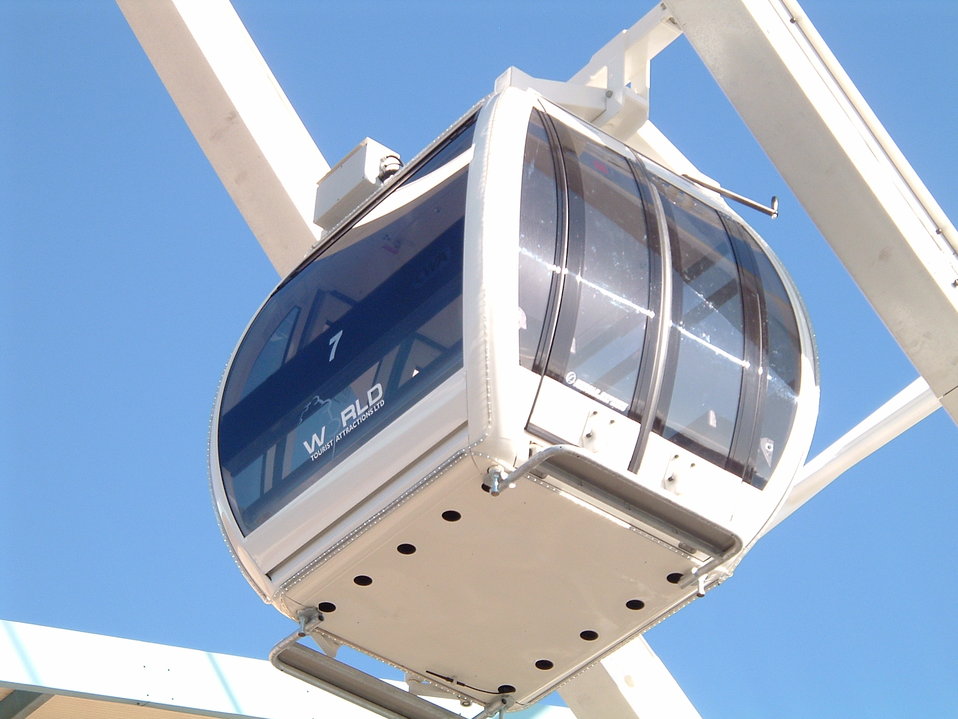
One of the pods on the 54 metre high Yorkshire Wheel, that was installed at the National Railway Museum in York. It was sited 53°57′35.81″N 1°5′44.42″W / 53.9599472°N 1.0956722°W / 53.9599472; -1.0956722 next to and in line with the southern wall of the museum's Great Hall. Construction started in March 2006 and the wheel operated from 12 April 2006 until 2 November 2008, being dismantled shortly afterwards.